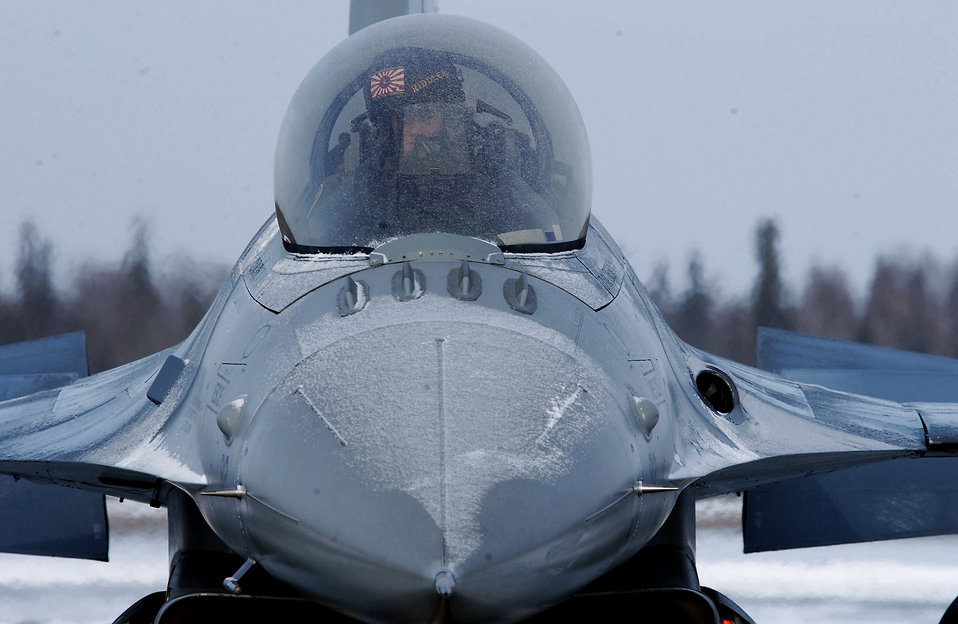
Red Flag-Alaska pilots engage in realistic combat scenarios

Capt. Bryan Spence controls the flaps and rudder on an F-16 Fighting Falcon during a preflight inspection to ensure all ice build up has been melted for maximum aerodynamic performance before a Red Flag-Alaska 08-2 training mission April 8 at Eielson Air Force Base, Alaska. Captain Spence is assigned to Misawa Air Base, Japan.